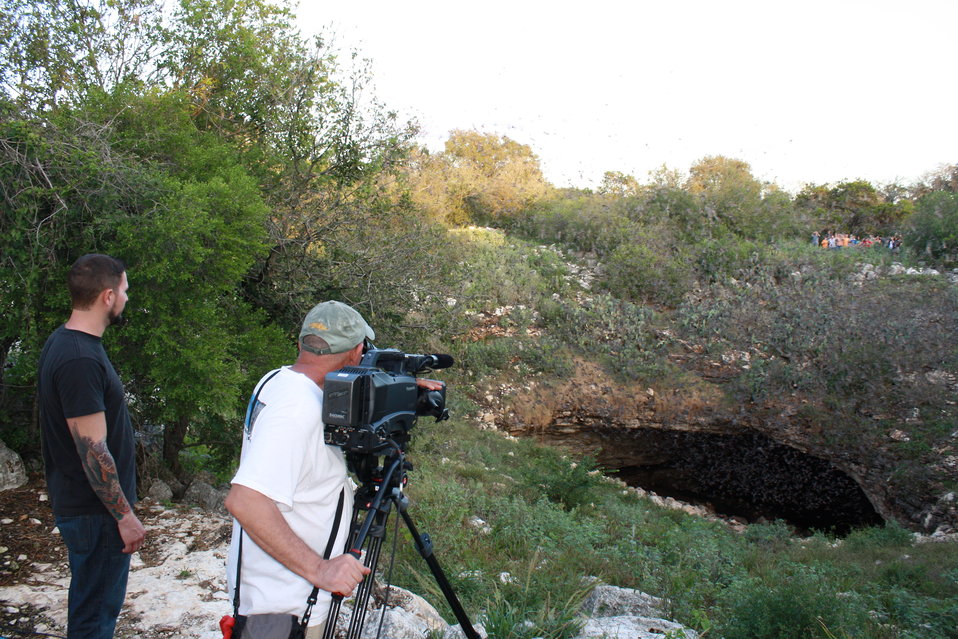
Setting cameras for live broadcast